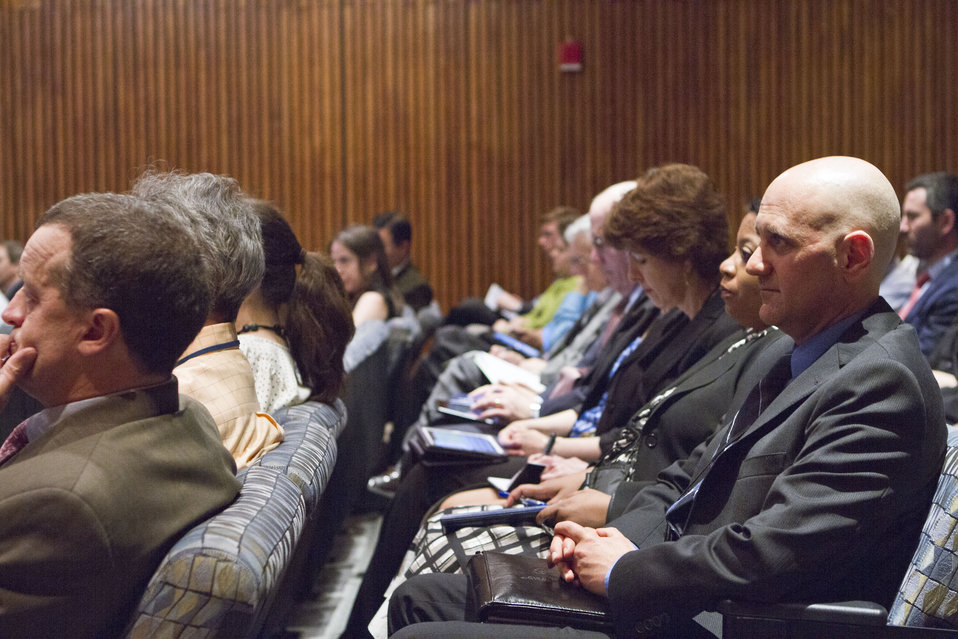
DOE Town Hall

On May 22, 2013, newly sworn-in Energy Secretary Dr. Ernest Moniz opened up a town hall forum. DOE employees were invited to attend, and submit questions to staff.